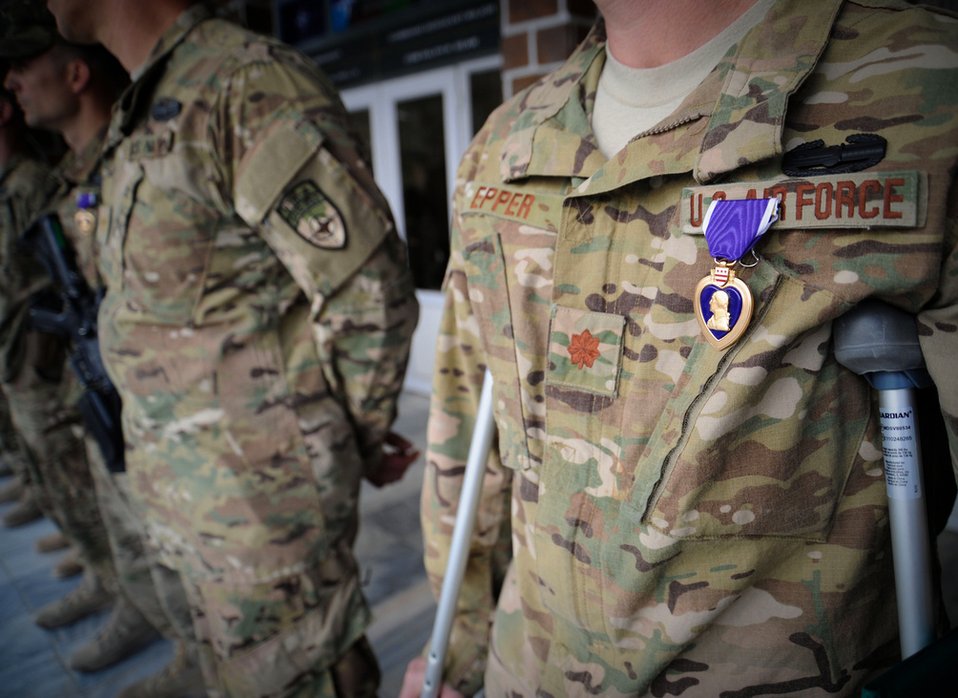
Purple Heart

Maj. Michael Epper was one of 12 service members recognized for actions taken Oct. 26, 2011, when his convoy was ambushed twice while traveling through Afghanistan's Tangi Valley. The team successfully overcame a 45-minute complex attack in which insurgents used rocket-propelled grenades, small-arms fire and roadside bombs. Epper is from Byram, N.J.